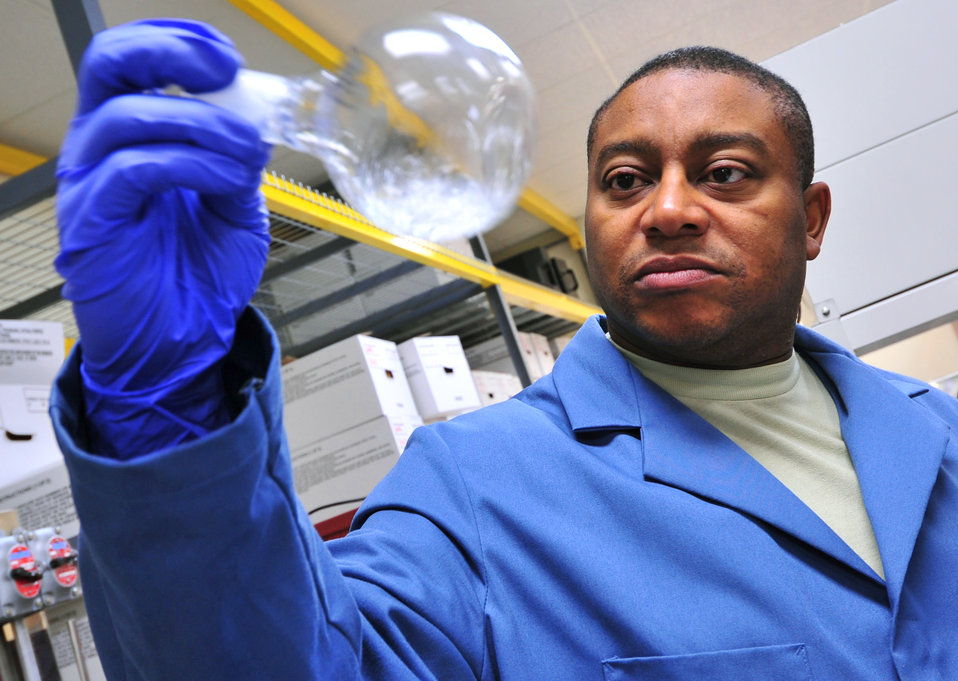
One man's trash is another man's trash, too

Tech. Sgt. James Thompson analyzes samples for the presence of polychlorinated biphenyls, a toxic group of chemicals commonly found in older electrical transformers, Jan. 13, 2010, at Kadena Air Base, Japan. Sergeant Thompson is a Det. 3, U.S. Air Force School of Aerospace Medicine lab technician.